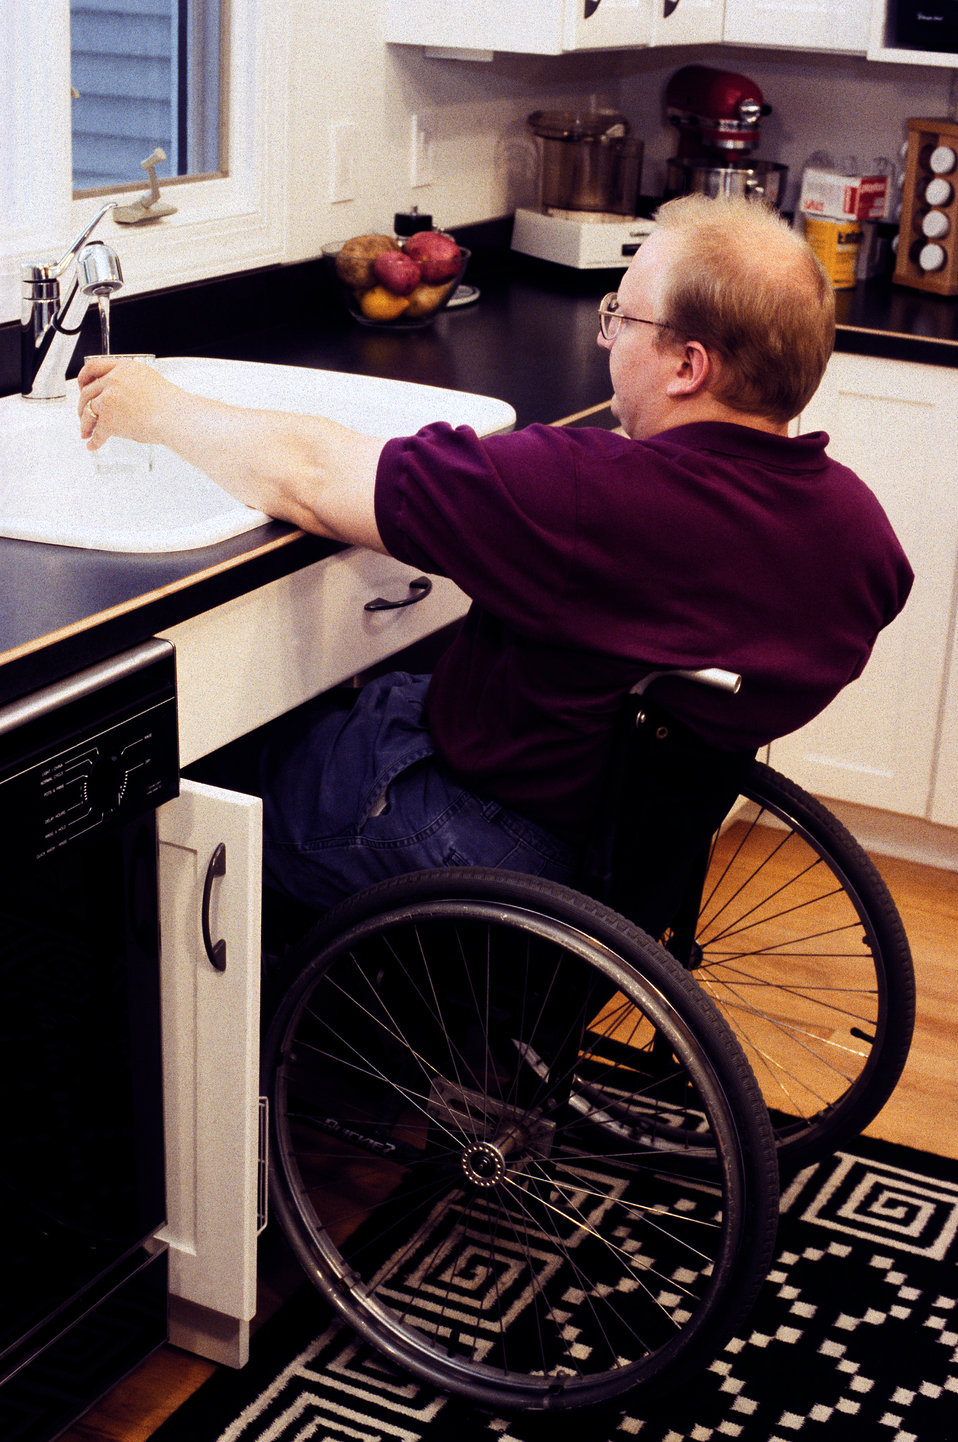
This man seated in his wheelchair, was in a customized kitchen outfitted with adaptable cabinetry, which allowed him to pull his seat closely to the sink while filling his glass with tap water. The man's knees could be pulled up beneath the sink, so as to be more comfortable during this activity. Adaptable features such as this can facilitate intergenerational activities by providing flexibility for the needs of different users, including those with, or without mobility or visual impairments.